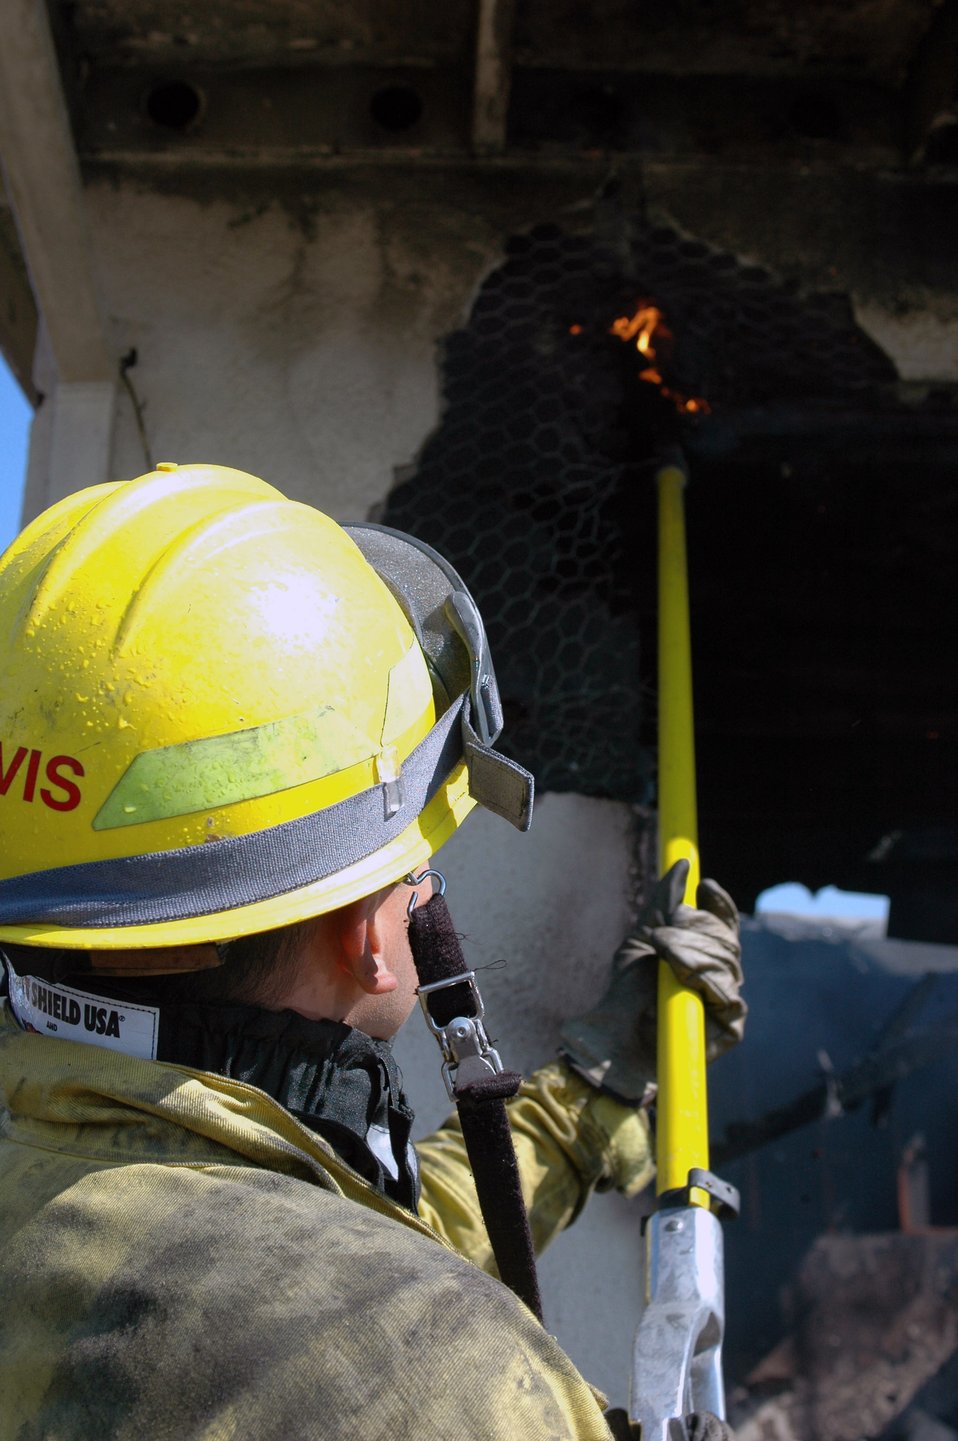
Travis, California firefighters extinguish blaze

Airman Alejandro Sablan uses a pike pole to knock down any fire remaining in a building destroyed by an eight-alarm fire Aug. 16 at Travis Air Force Base, Calif. Heavy winds caused the fire, which originated outside the base, to spread to a section of base housing that was scheduled to be demolished. Airman Sablan is a 60th Civil Engineering Squadron firefighter.